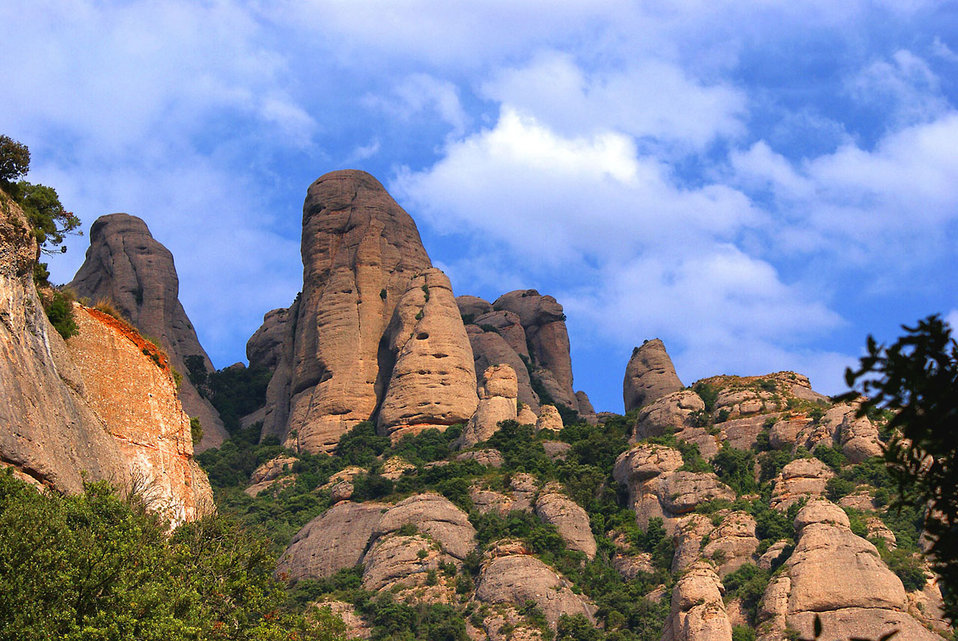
Mountain

Weird stone formations.